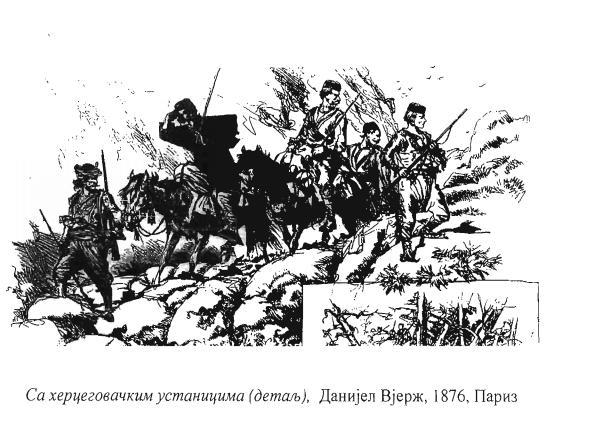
Copy of 1876 work by Daniel Vierge (1851–1904) made in Paris.